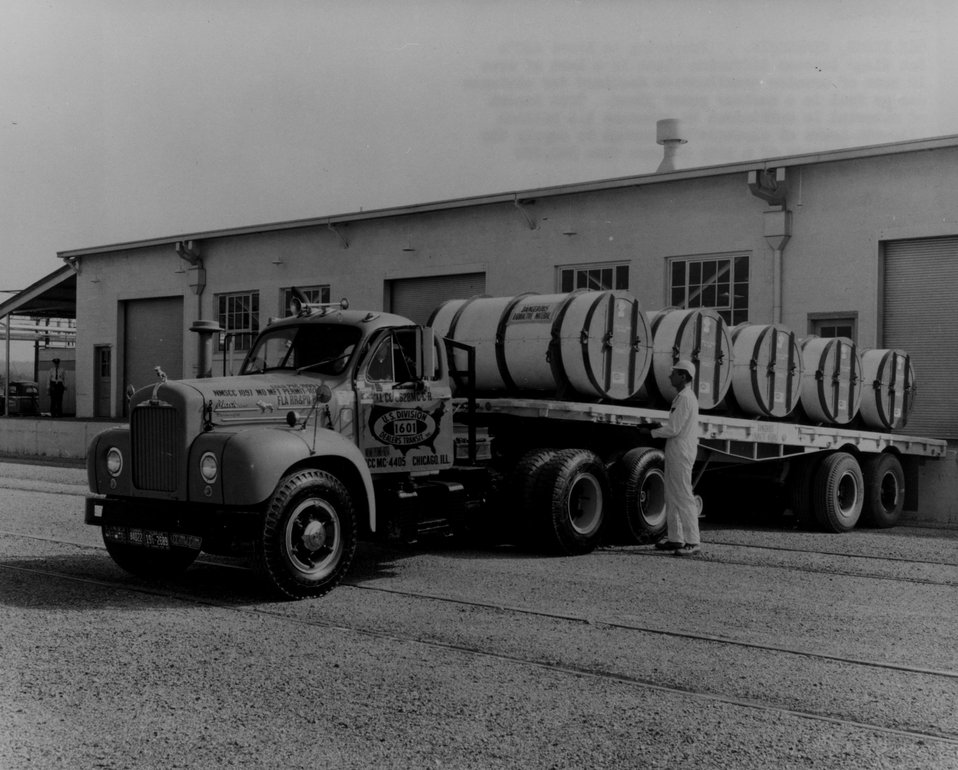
Preparing to leave ERDA's Oak Ridge Gaseous Diffusion Plant is a load of some 12 tons of uranium hexaflouride destined for ultimate use as fuel in a nuclear power plant. c. 1969